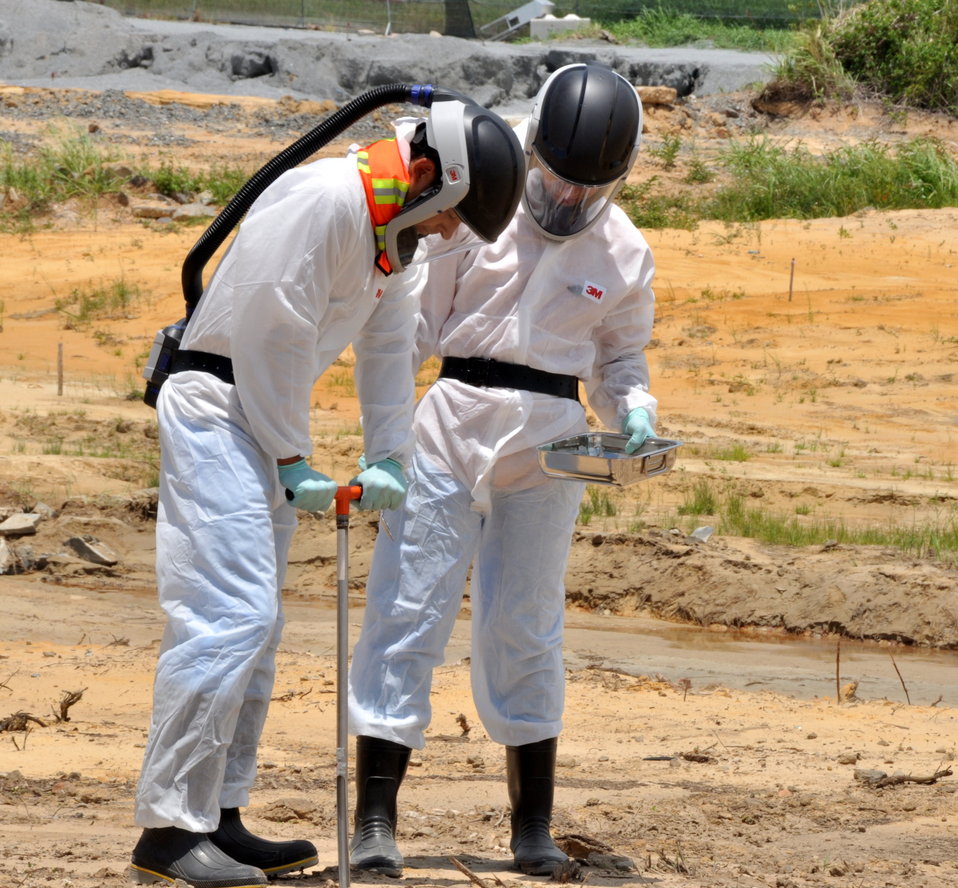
USAID Dioxin Contamination Project Progress: Soil Sampling

Progress at the Environmental Remediation of Dioxin Contamination Project at Danang Airport

July 16, 2013